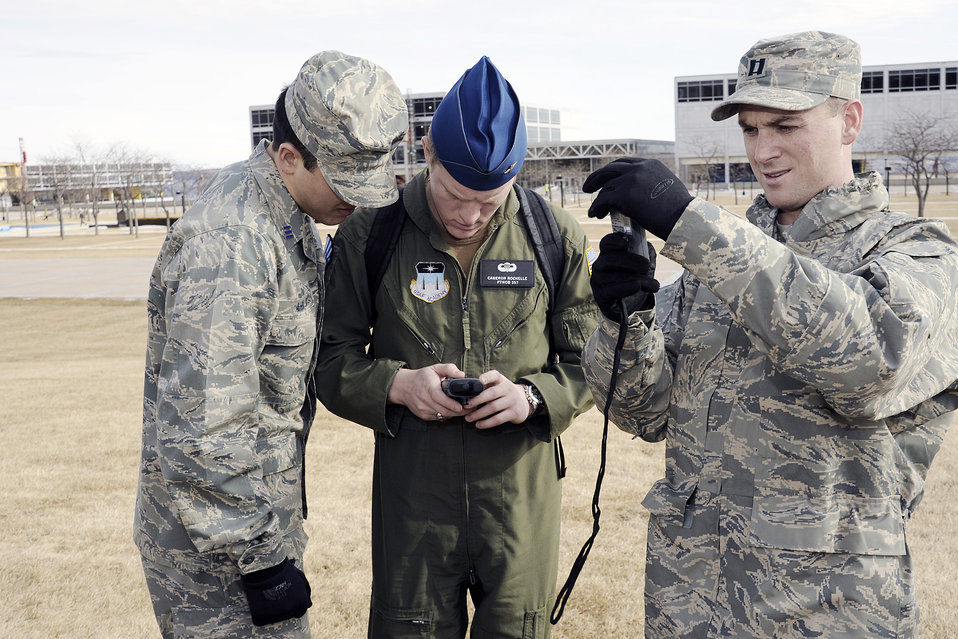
U.S. Air Force Academy, Colo-- Capt Paul Homan, director of Meteorology, Cadet 1st Class Christopher Ahn and Cameron Rochelle take baseline atmospheric and GPS measurements in preparation of a weather balloon launch as part of the Meteorology 320 course, Introduction to Meteorology and Aviation Weather. This course teaches the fundamentals of meteorology with special emphasis placed on flight weather and its impact on aviation.